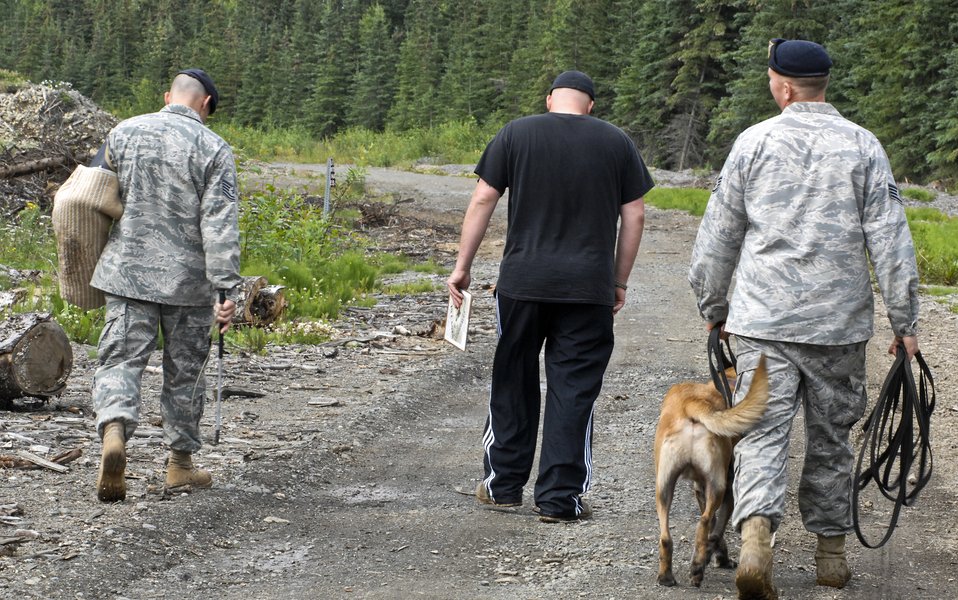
Working dogs at Elmendorf

Security Forces military working dog trainers finish a full day of training by heading back to the kennels July 22, 2010, at Joint Base Elmendorf-Richardson, Alaska.